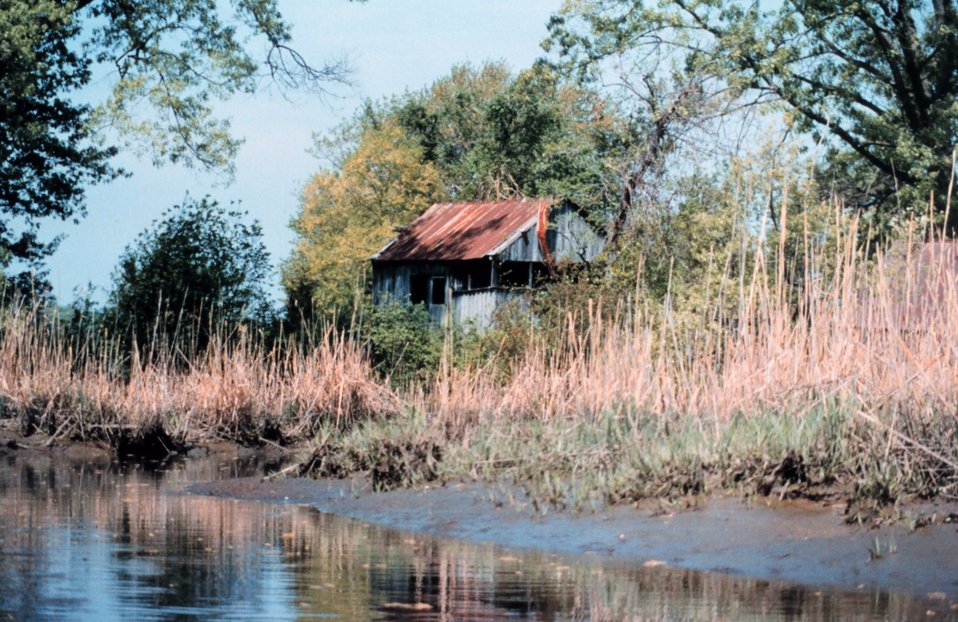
Muddy shoreline next to an abandoned shack